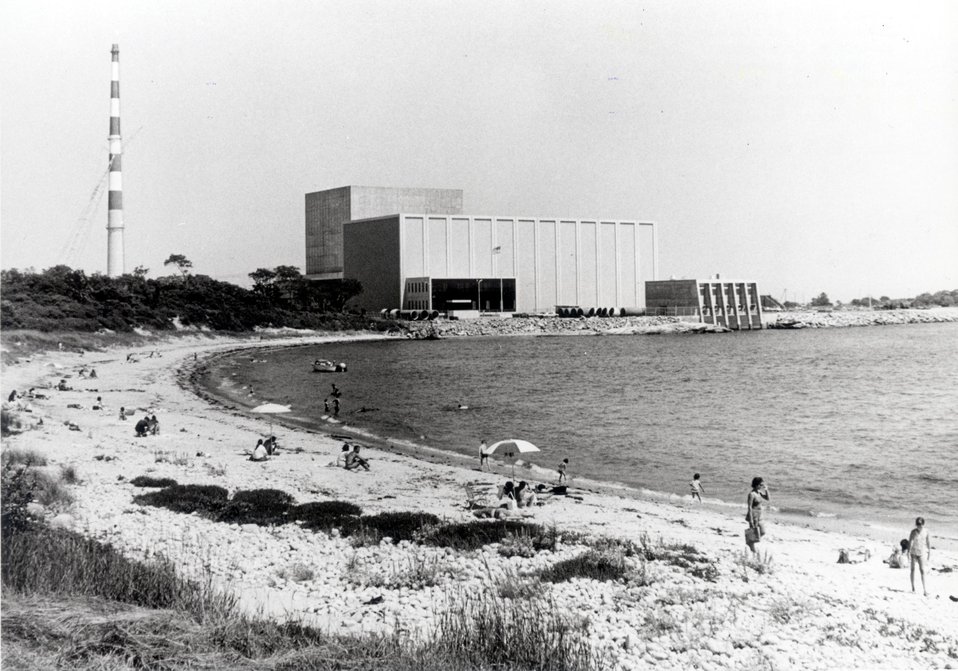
Millstone Nuclear Power Station Unit 1.